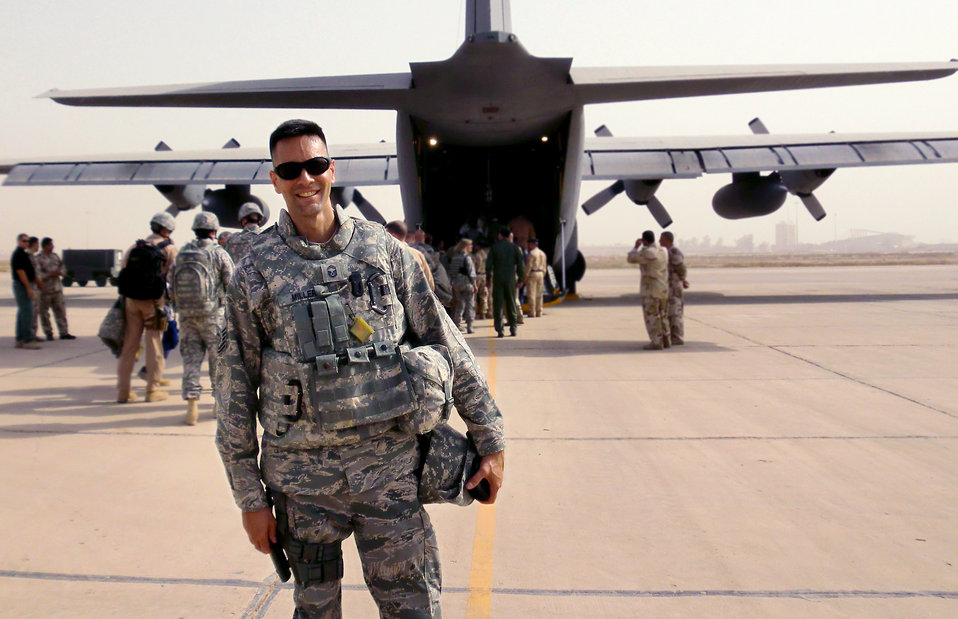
Senior NCO forges partnership

Senior Master Sgt. Dean Miller prepares to board an Iraqi C-130 Sept. 21, 2010, on New Al Muthana Air Base, Iraq. Sergeant Miller is the 62nd Airlift Wing chief of public affairs.